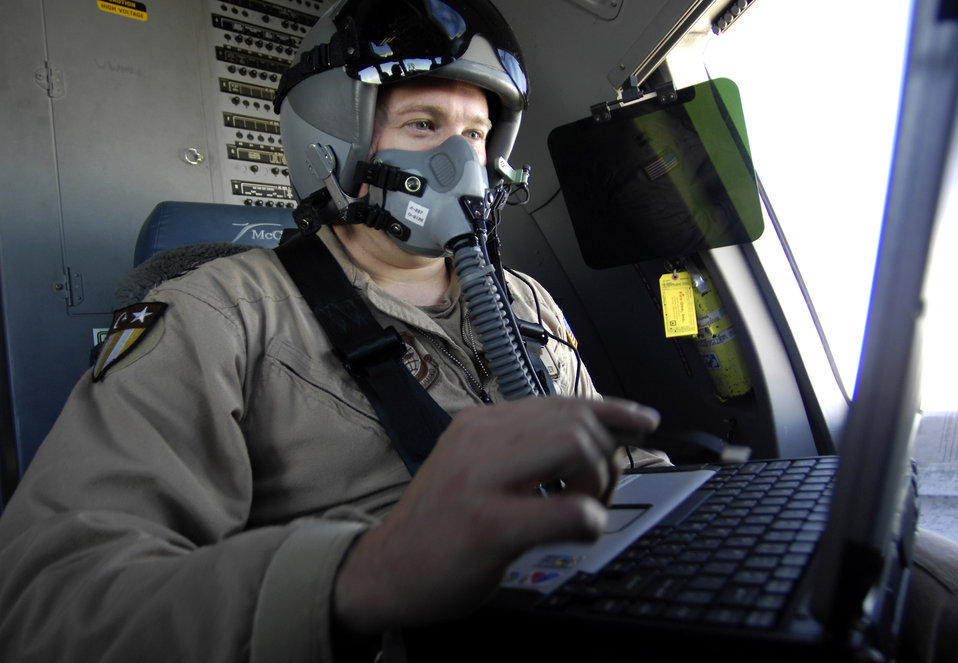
C-17 crews make record airdrop

Capt. Mathew Oliver uses the Precision Air Drop System to calculate the precise airdrop release point Oct. 11 over Afghanistan. The computer gets some of its information from a dropsond, released over the drop zone, that sends information such as altitude and wind speed back to the computer. A total of 62 cargo bundles were dropped from two C-17s in two passes. This was the first time a combat cargo drop of this magnitude has taken place from two C-17s in formation over one drop zone. The planes and crews are part of the 817th Expeditionary Airlift Squadron, Manas, Kyrgyzstan.